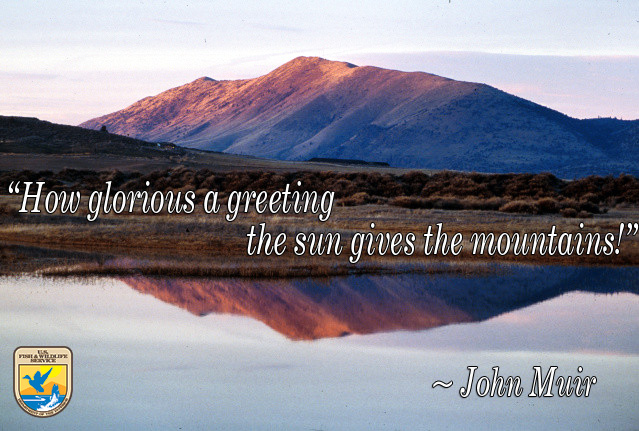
Get Inspired!

Download, share and enjoy!